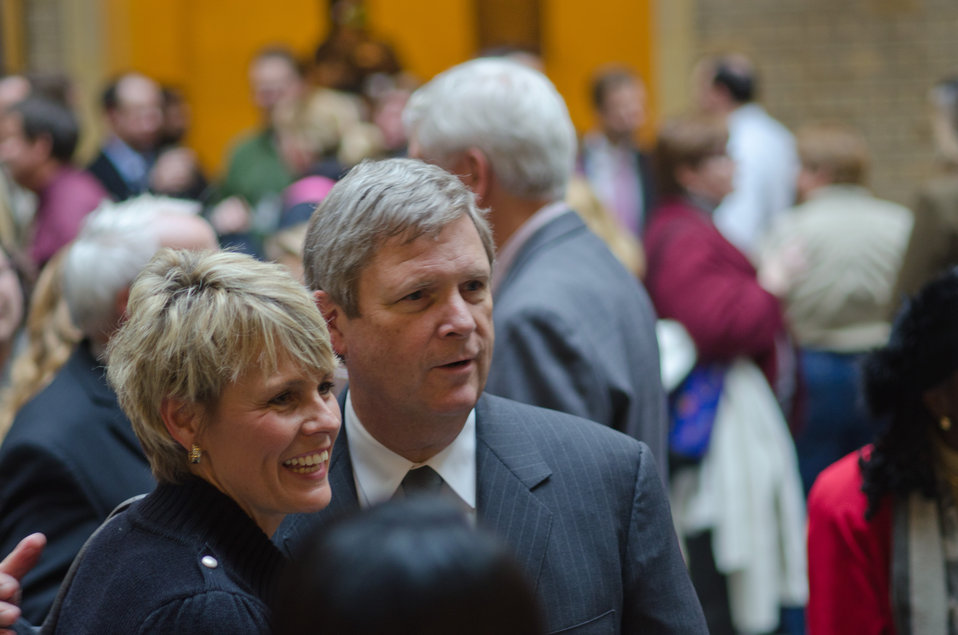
U.S. Department of Agriculture (USDA) Secretary Tom Vilsack (center) poses for a picture at a get together of colleagues for conversation and a break from the day-to-day routine, on the Patio of the Whitten Building in Washington, DC, on Friday, March 25, 2011. Secretary Vilsack sponsored the pop and pretzel event “to help recognize the great work we are doing together for the American people'. The event enjoyed standing room only, attendance.